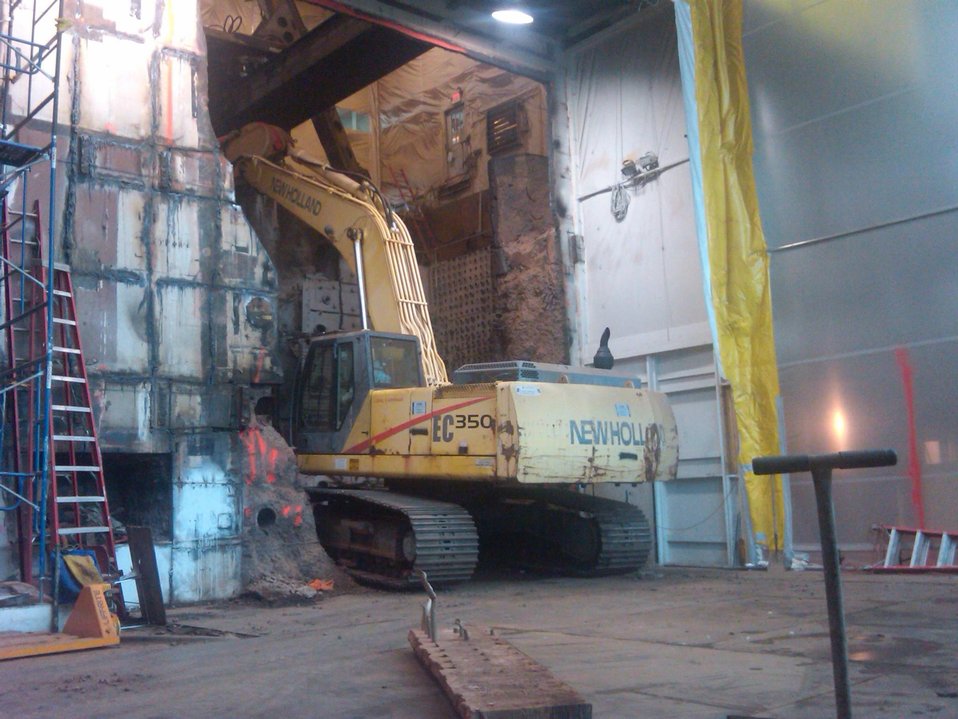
Brookhaven excavator

The Lab’s new excavator enters the Brookhaven Graphite Research Reactor Bioshield through an opening in its west wall.